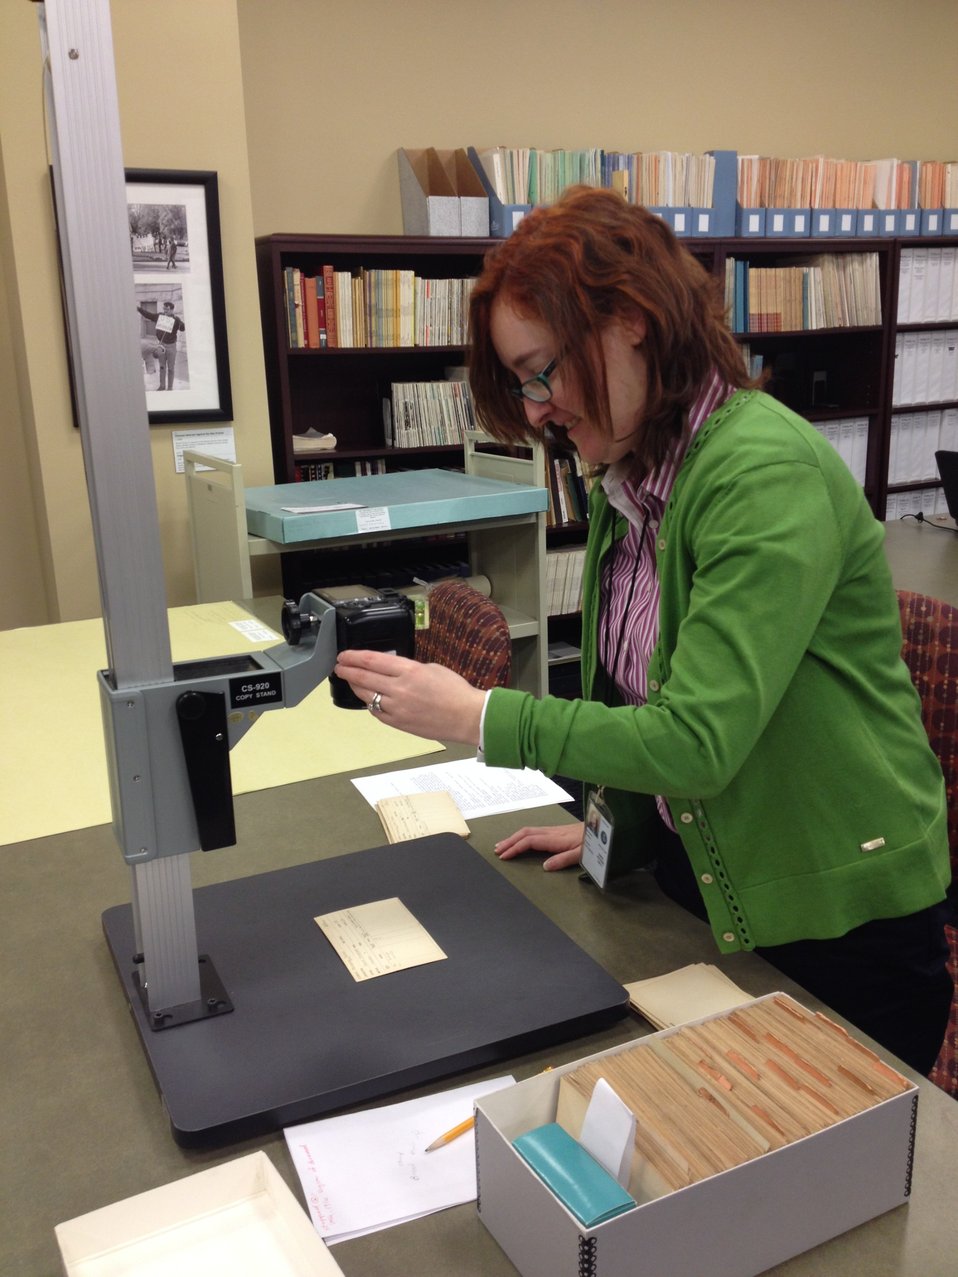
Camera Stand digitization project - Aubrey Maynard (intern); Location: National Archives at Kansas City - RMKC Research Room, Kansas City, MO